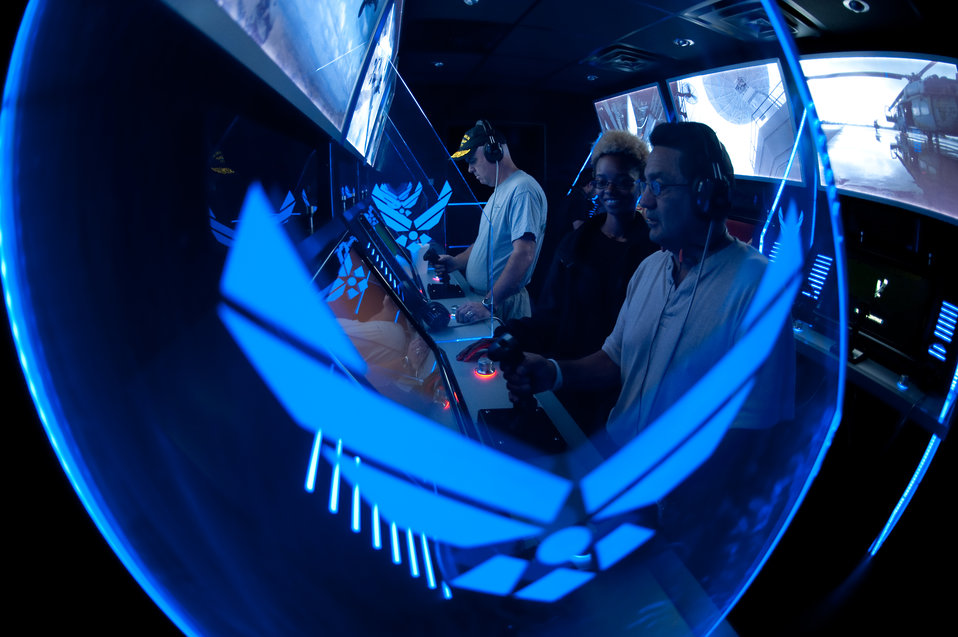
Air Force Week Now Showing in Times Square

Kim Goodin (left) and Frank Bazan try their best to be good operators in the Stealth Tour interactive display in Times Square during Air Force Week New York City Aug. 26, 2010.